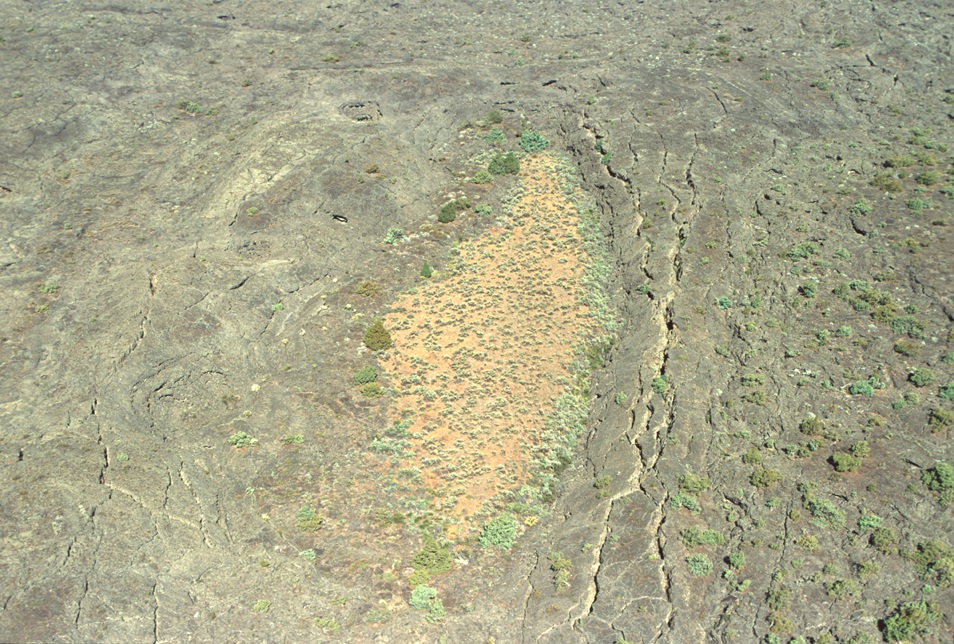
Craters of the Moon National Monument Shoshone Field Office USRD Upper Snake River District